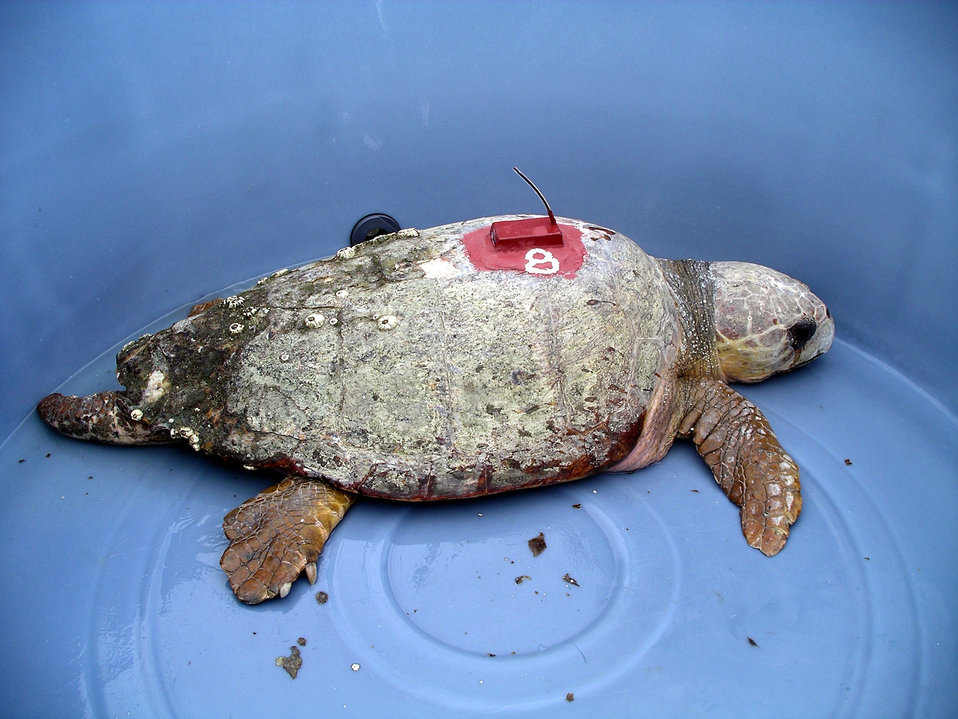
Loggerhead Turtle

Adult male loggerhead turtle fitted with a transmitter for satellite tracking of migratory patterns.